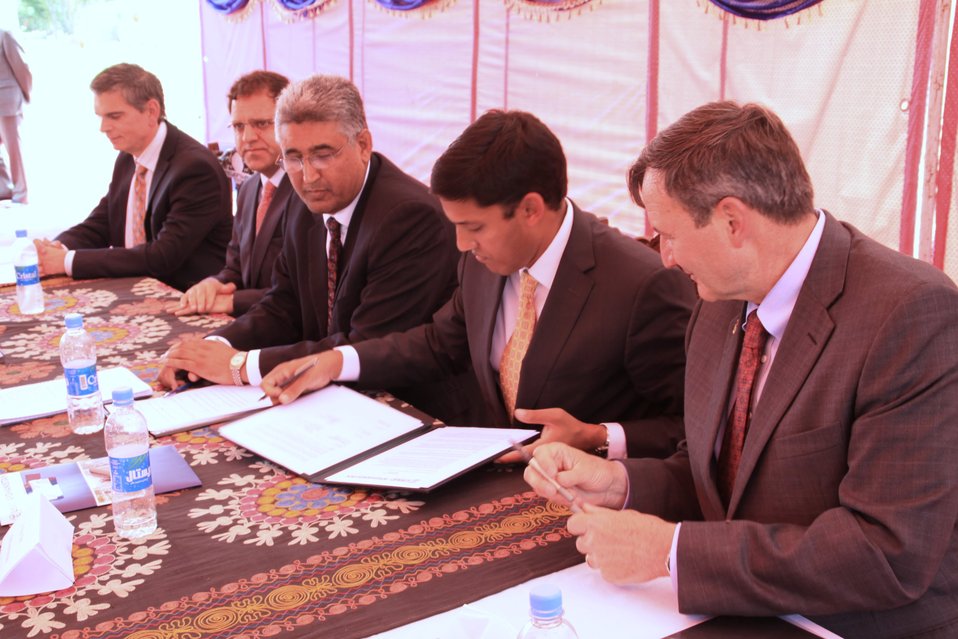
Badam Bagh Farm